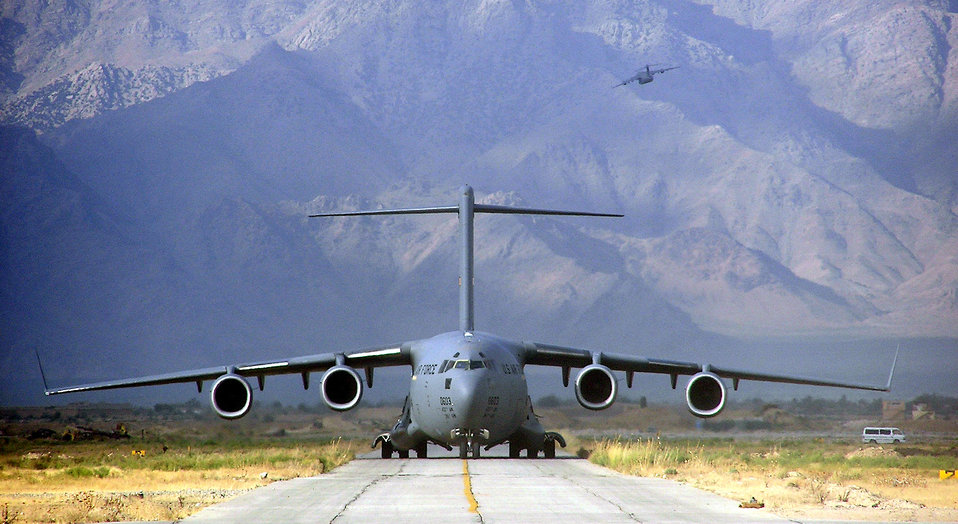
Moving a mountain

BAGRAM AIR BASE, Afghanistan -- A C-17 Globemaster III from Charleston Air Force Base, S.C., moves up the taxiway as another begins its climb over the mountains surrounding this base. Airlift serves a vital role in ongoing operations in this landlocked country, bringing critical supplies and equipment to coalition forces supporting Operation Enduring Freedom.